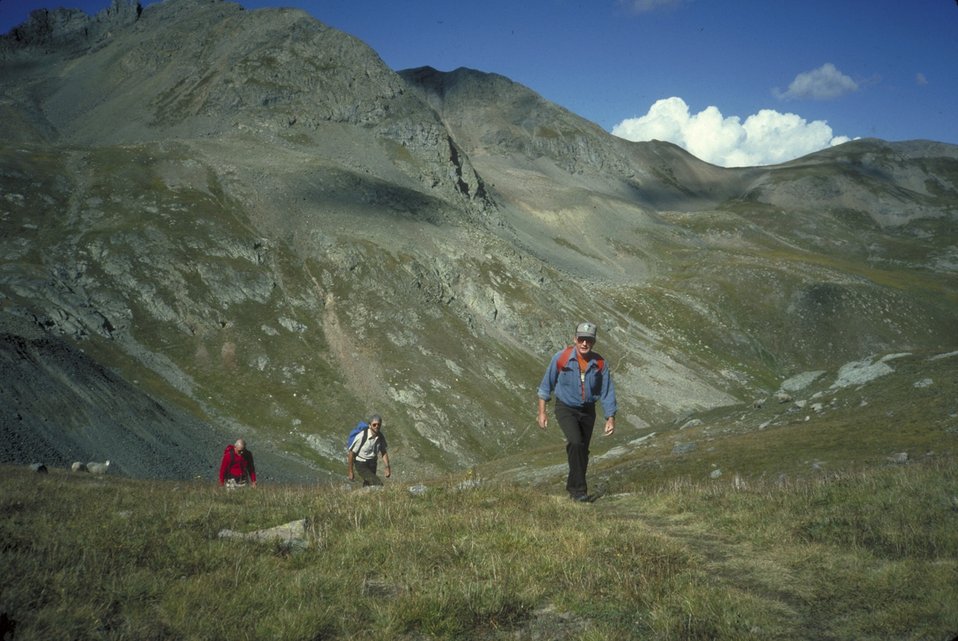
Back Country